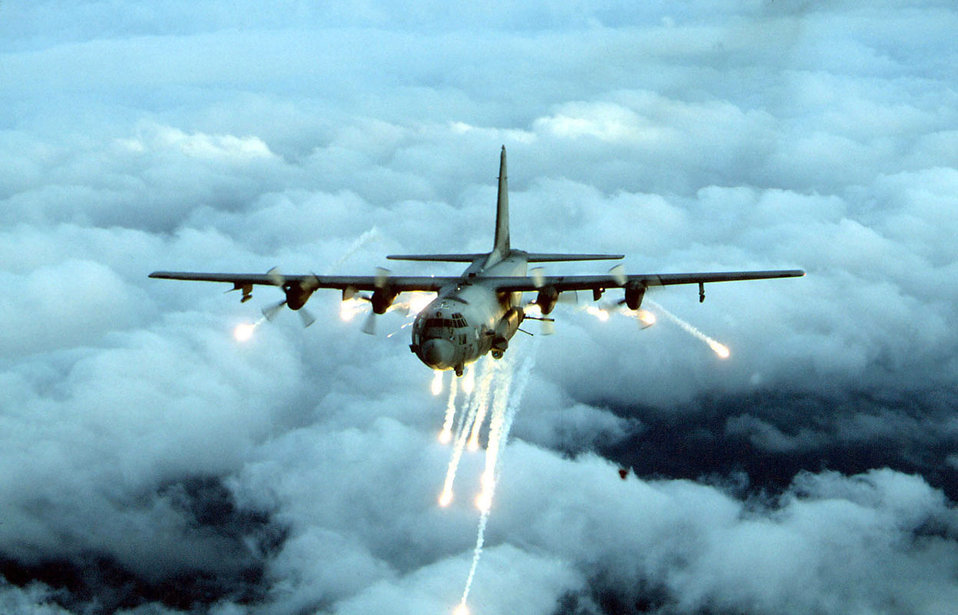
AC-130H Spectre

The AC-130H Spectre gunship's primary missions are close air support, air interdiction and armed reconnaissance. Other missions include perimeter and point defense, escort, landing, drop and extraction zone support, forward air control, limited command and control, and combat search and rescue. These heavily armed aircraft incorporate side-firing weapons integrated with sophisticated sensor, navigation and fire control systems to provide surgical firepower or area saturation during extended periods, at night and in adverse weather.

The sensor suite consists of a low-light-level television sensor and an infrared sensor. Radar and electronic sensors also give the gunship a method of positively identifying friendly ground forces as well as effective ordnance delivery during adverse weather conditions. Navigational devices include an inertial navigation system and global positioning system.